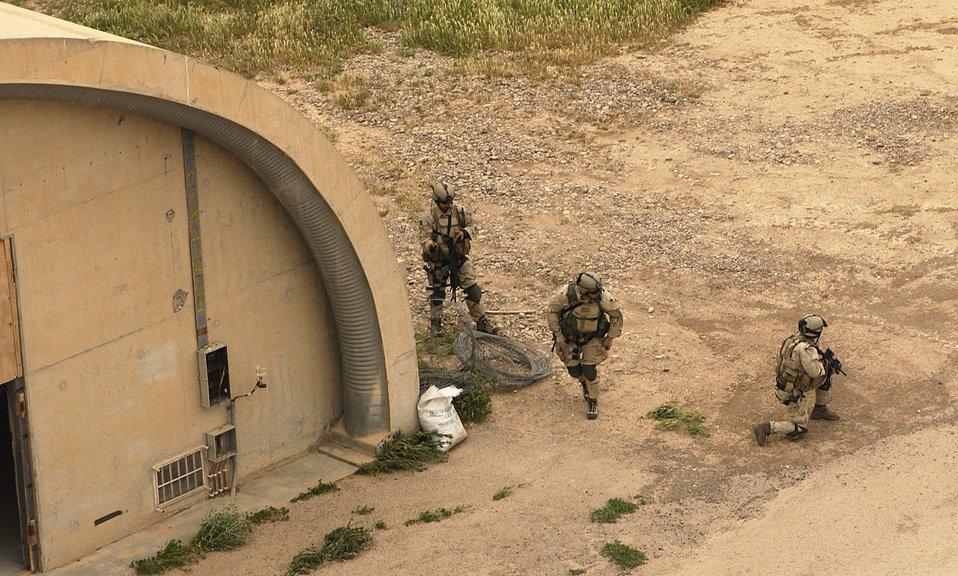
Securing the zone

BALAD AIR BASE, Iraq -- U.S. Air Force pararescuemen secure a landing zone here March 30. The pararescuemen are from the 64th Expeditionary Rescue Squadron.